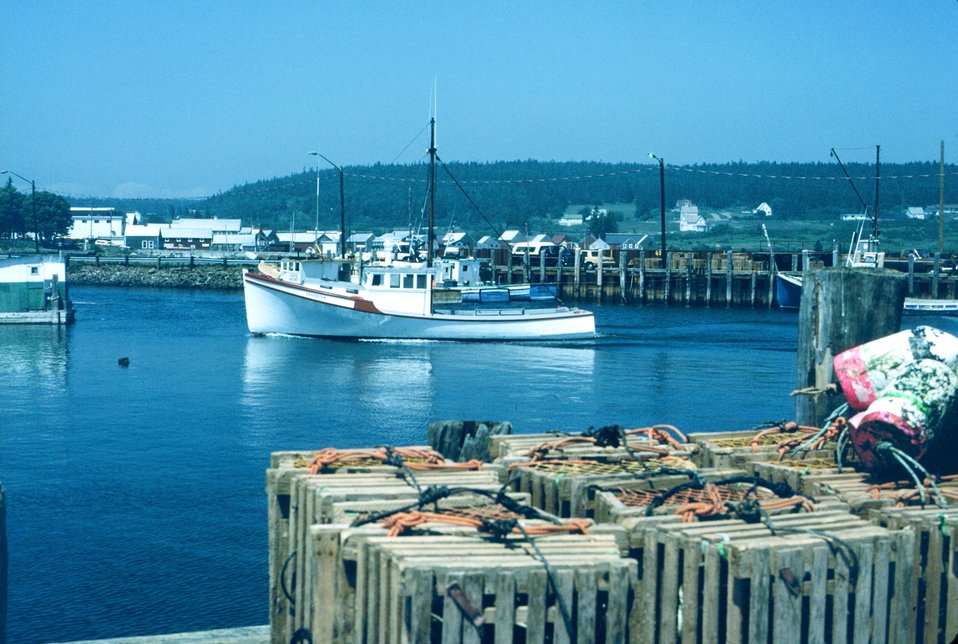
Southeast New Brunswick fishing village.